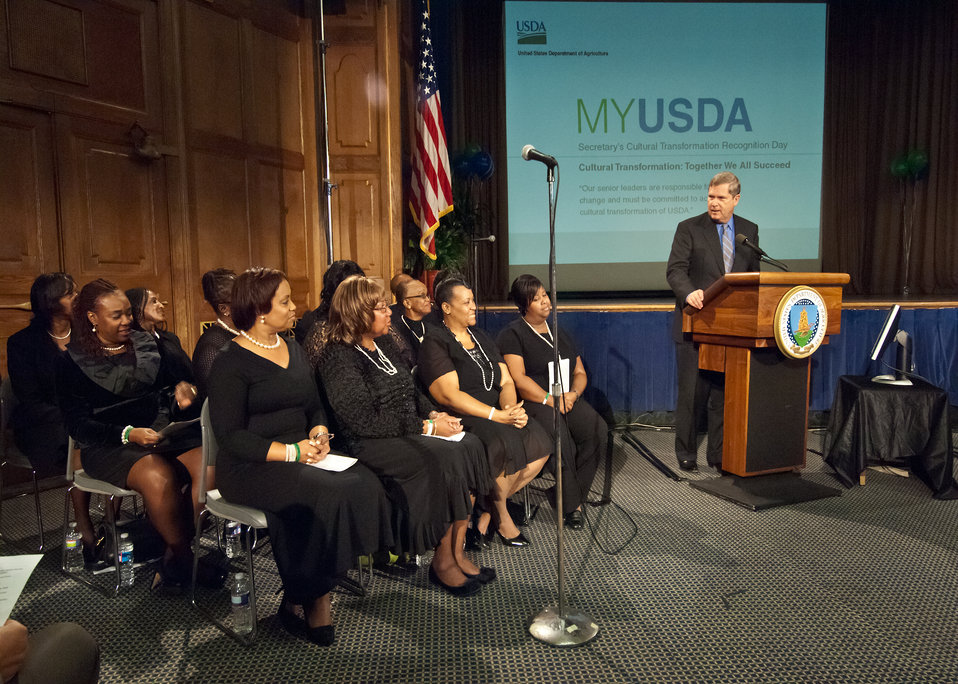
Agriculture Secretary Tom Vilsack commends to the Blacks in Government (BIG) Choir on their talent during the Cultural Transformation Recognition Ceremony at the Jefferson Auditorium, US Department of Agriculture in Washington, DC, on Tuesday, October 4, 2011. Cultural Transformation is the process of creating a workplace where all employees and customers are treated with dignity, respect and the opportunity for success. Recognizing the important contributions of all employees to the operation of the United States Department of Agriculture. The goal of cultural transformation is to get everyone at USDA – from the Under Secretaries to employees at every grade level, in every location - to ensure USDA is a place where there’s opportunity for all to reach their full potential. Only then can USDA provide its customers with exceptional service in an equitable manner.